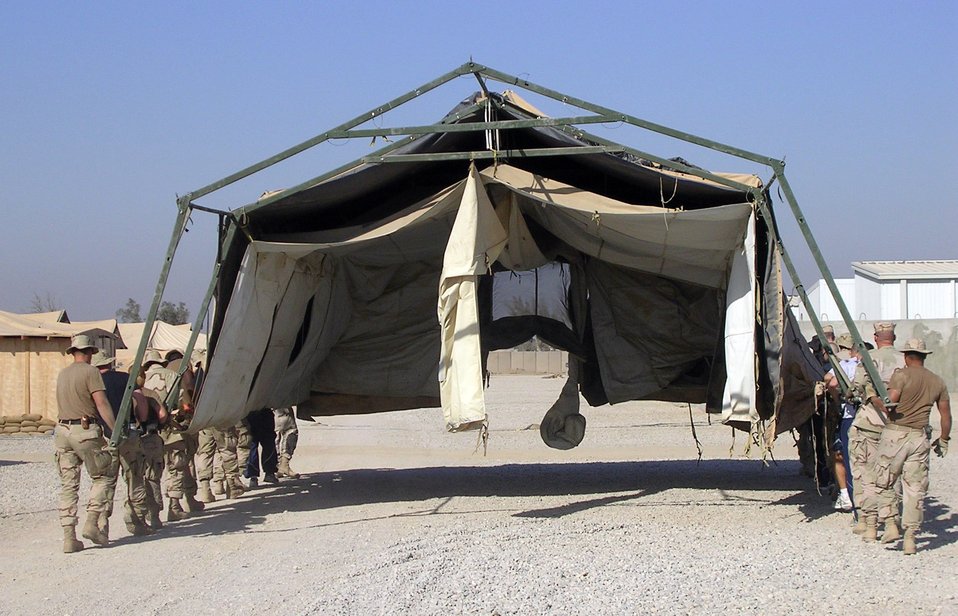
Pick up and move

ALI BASE, Iraq (AFPN) -- Taking Air and Space Expeditionary Force doctrine literally, Airmen move their tent to a new location at this base. When the 407th Air Expeditionary Group needed space for a new services facility, 407th Expeditionary Civil Engineer Squadron troops and volunteers simply picked up the tent that stood in the way and moved it to a new spot 200 yards away. That saved the several hour it would have taken to tear down and set the tent back up .